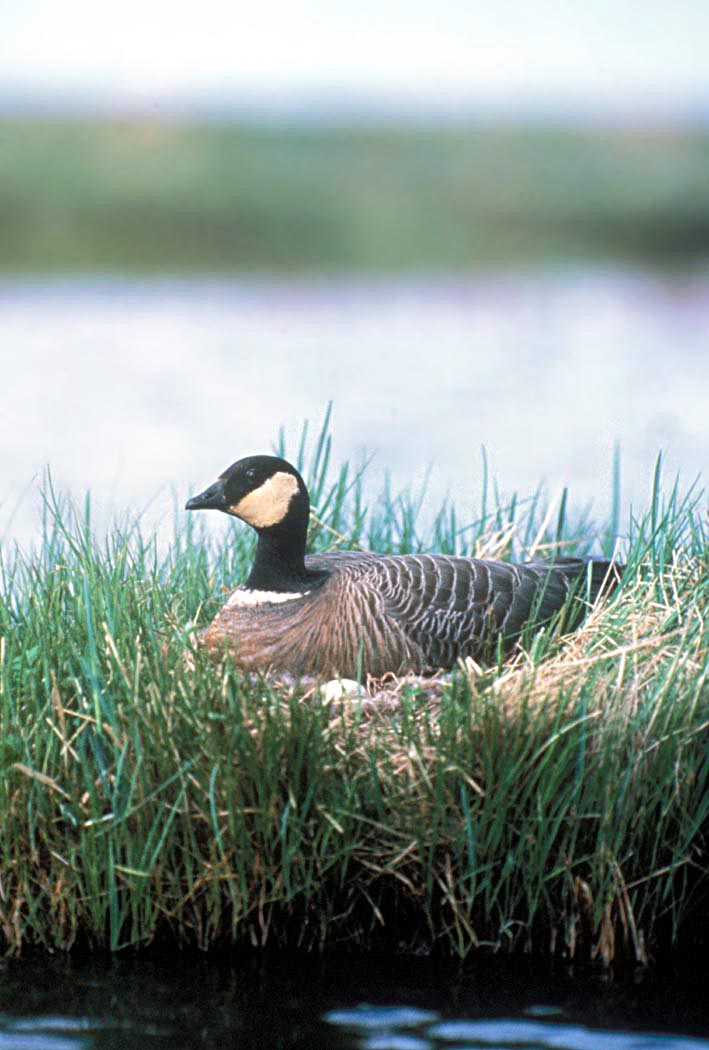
Cackling Canada goose on nest